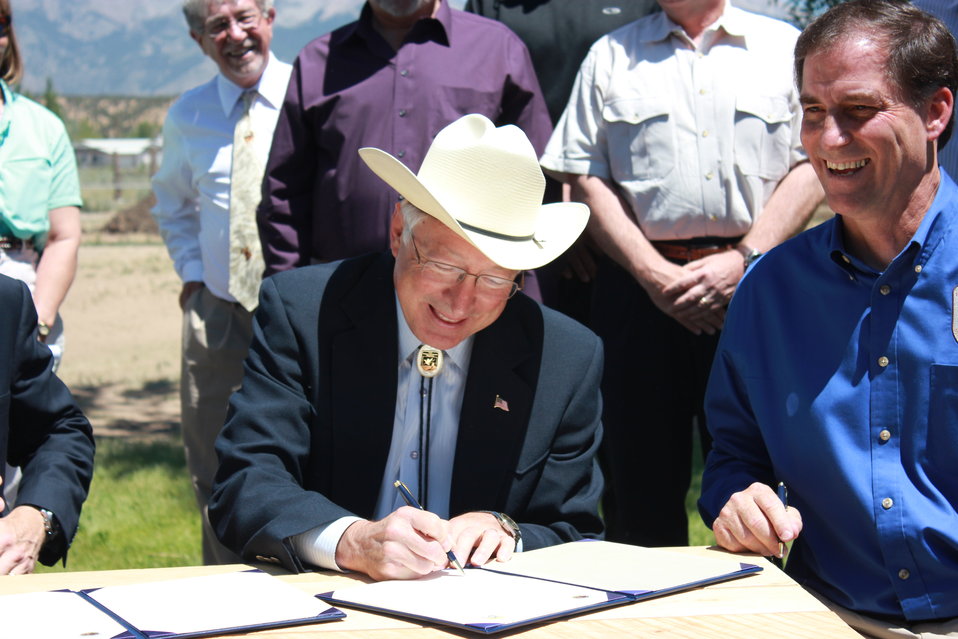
Historic Conservation Easement in Sangre de Cristo Mountains